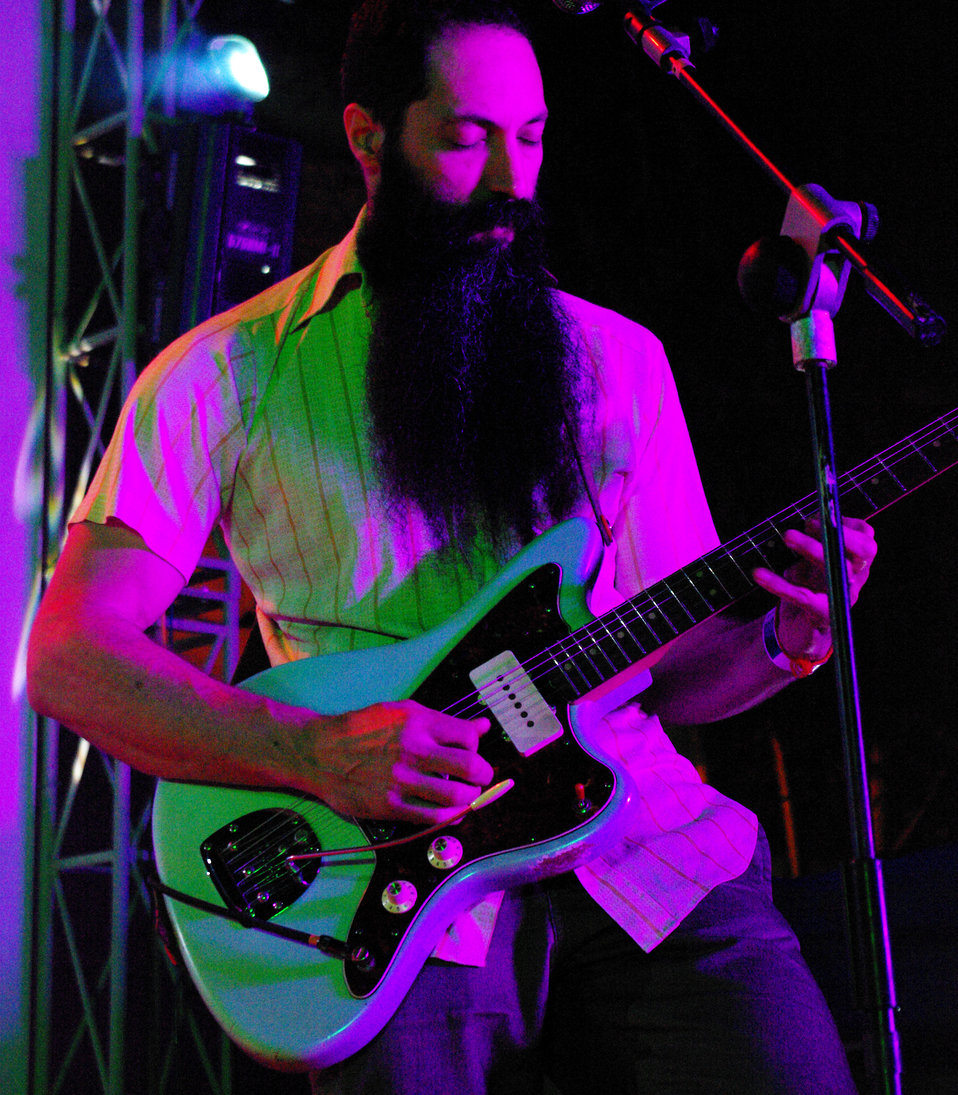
PEPFAR, U.S. Embassy Host Dengue Fever Concert in Hanoi